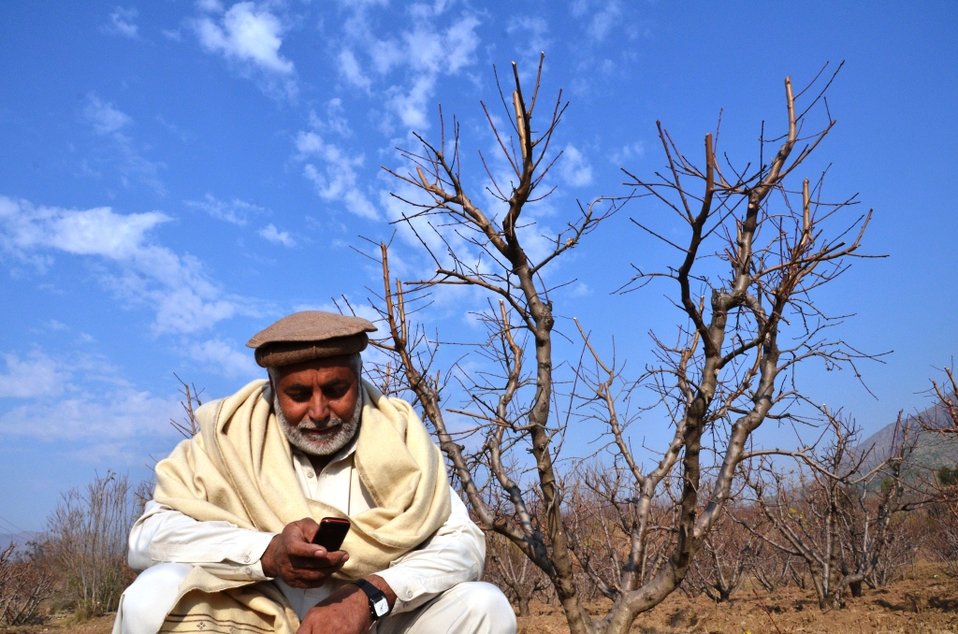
A subscribed farmer reading a text alert regarding best farming practices

Peach and Potato farmers in Swat are receiving text alerts on their mobile phones which is helping them improve their farming practices.